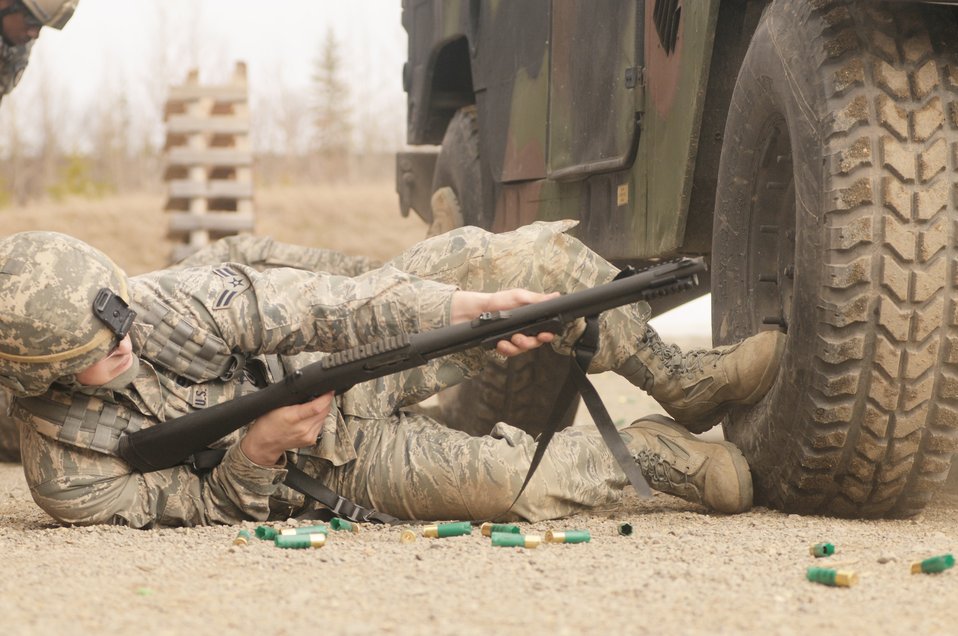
Staying low

During Vigilant Guard, Airman First Class Matthew Taylor fires his shotgun from a defensive position on the small-weapons range April 28, 2010, at Fort Richardson, Alaska. Airman Taylor is assigned to the Oregon Air National Guard's 173rd Security Forces Squadron.